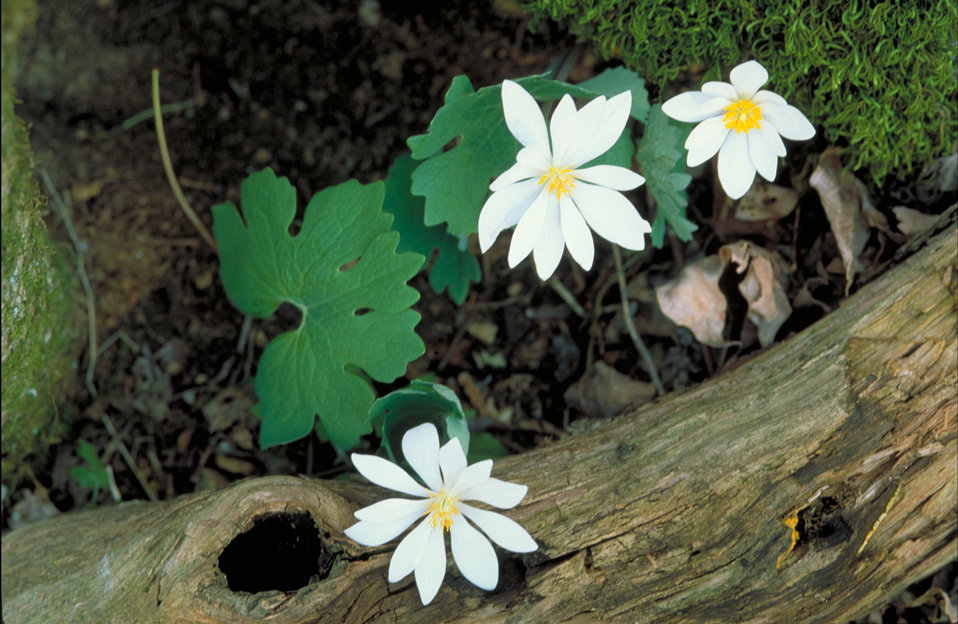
White bloodroot flowers

Shot of white woodland flowers with yellow centers.